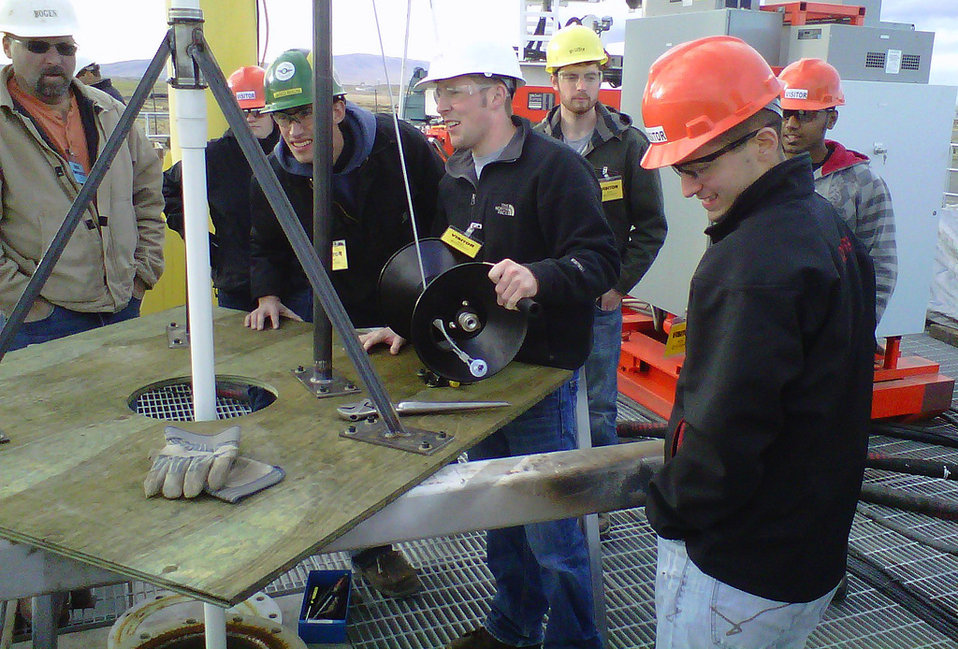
WSU students help design telescoping camera platform to take pics in Hanford's underground storage tanks

Greg Bogan (left), Columbia Energy Environmental Services, oversees work on a telescoping camera platform designed by Washington State University mechanical engineering students Melissa Street, Jared Rixon, Ryan Breezee, Ben Revard, Gladwyn D’Souza, and Chris Mentzer. Two other students working on the project are not pictured in this photo.

As part of their senior project, the students are helping design a telescoping arm and camera system to take pictures inside Hanford’s underground storage tanks.

The students worked alongside mentors from the Department of Energy’s tank farms contractor, Washington River Protection Solutions (WRPS), on a budget of $10,000 provided by Columbia Energy Environmental Services (CEES). They brainstormed ideas, developed design specs, ordered parts, and assembled a unit into a functional prototype that they tested at the CEES Test Facility over Thanksgiving break.

The design consisted of a riser-mountable platform with a 24-foot long telescoping arm that lowers a camera into the tank to provide better photos for inspecting tank integrity. The platform would be mounted on a trailer, taken from farm to farm, and could even be improved to conduct routine tank-integrity inspections.